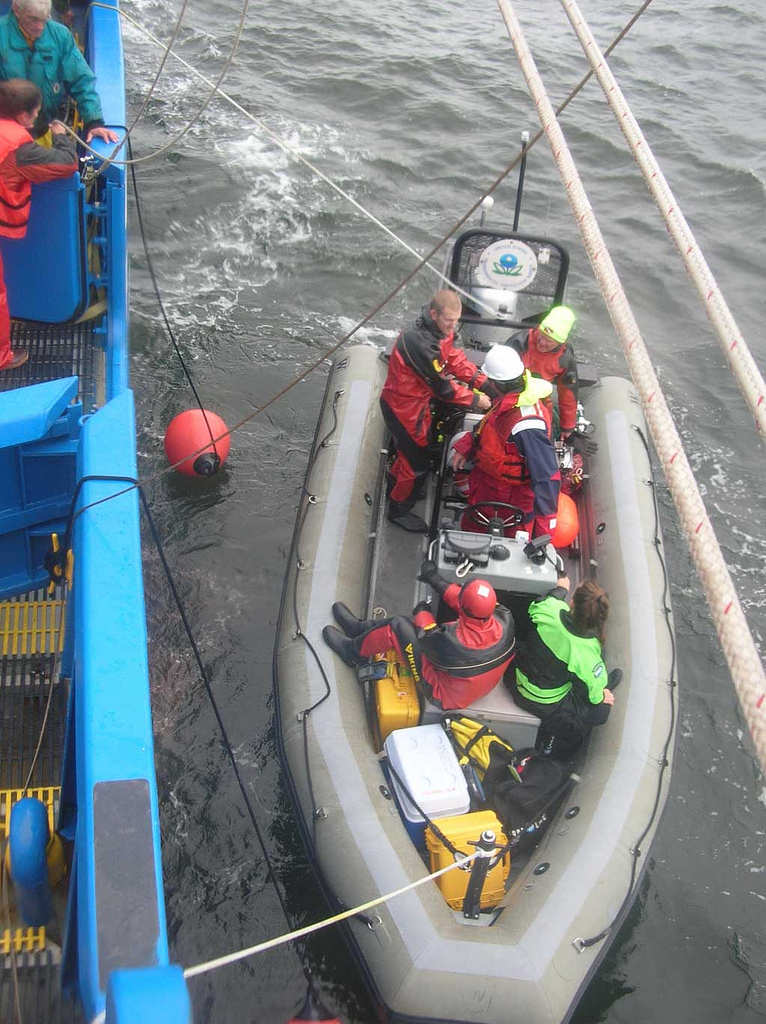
Diving from the Ocean Survey Vessel Bold

The OSV Bold is EPA's only ocean going research vessel. Around the country EPA scientists use the ship in a variety of ways to study the health of our coastal environment. During the OSV Bold's trip to the West Coast in 2008, EPA divers were able to help survey an ocean disposal site at the mouth of the Columbia River.

Using an underwater video camera, the bottom habitat was documented to determine whether the site was suitable for dredge spoil disposal, or if alternate sites might be recommended.